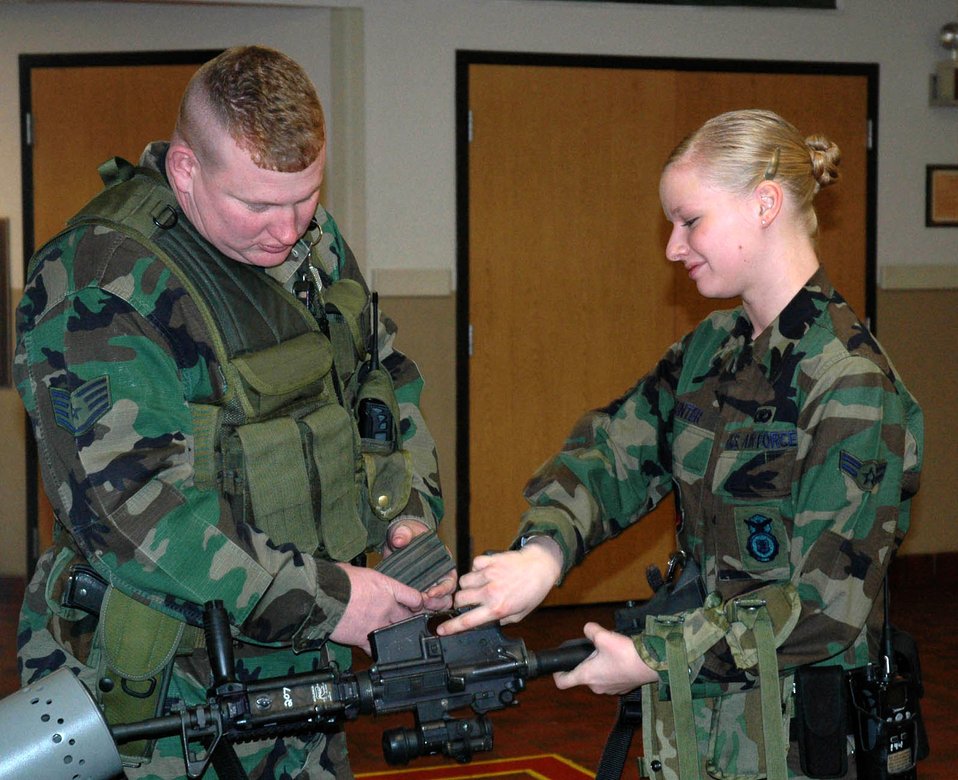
De-cocked

MINOT AIR FORCE BASE, N.D. (AFPN) -- Staff Sgt. James Chenoweth (left) watches Airman 1st Class Amanda Hunter clear her M-4 rifle. The Airmen worked during the holiday with approximately 70 other security forces Airmen to provide installation security and law enforcement. Both Airmen are with the 5th Security Forces Squadron.